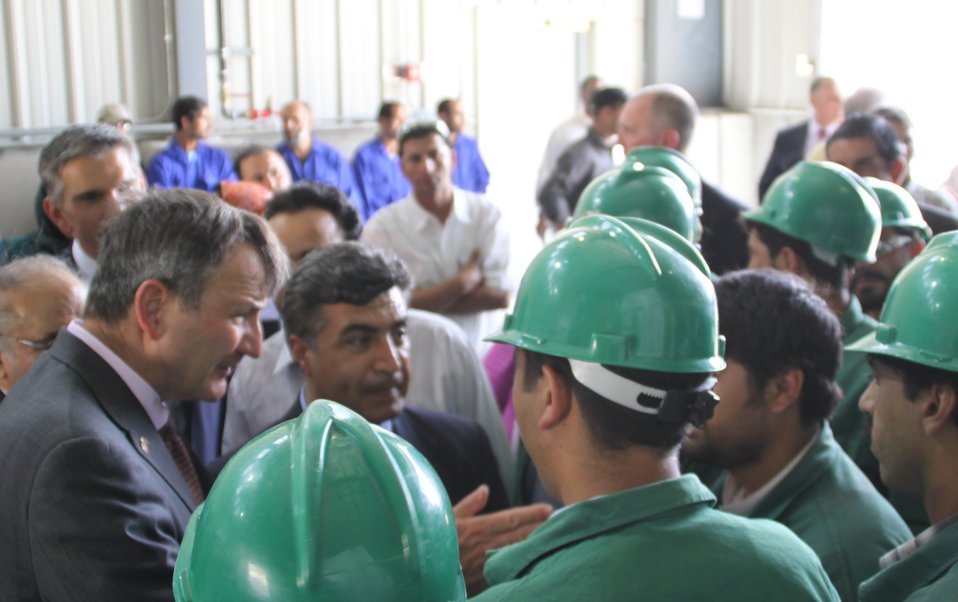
105 MW Tarakhil Power Plant Handover